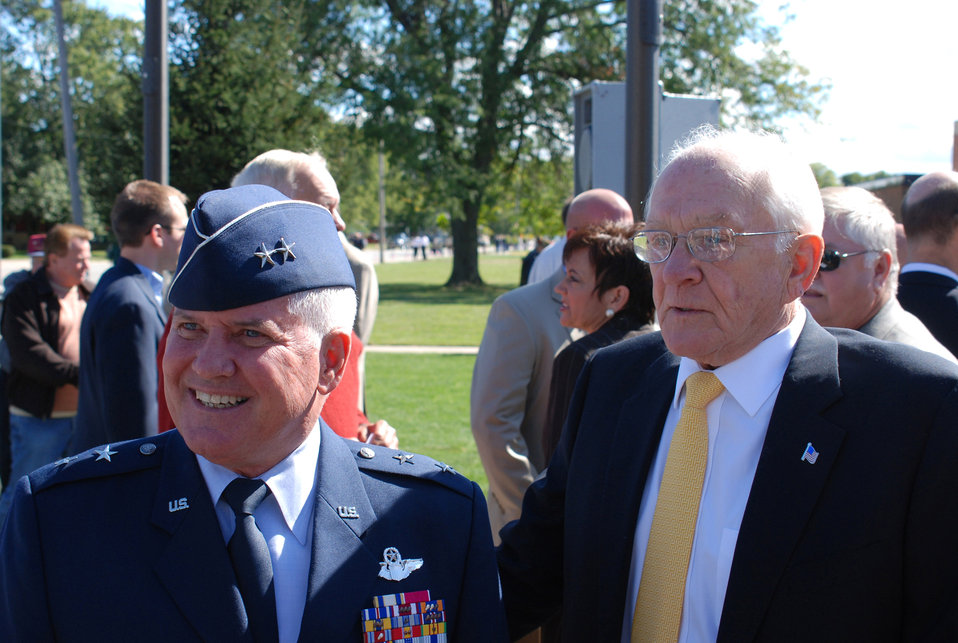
Illinois town dedicates park to local war hero

Maj. Gen. Allan R. Poulin (left) and retired Col. James Kasler chat with other people after the Kasler-Momence Veterans Park dedication Sept. 15 in Momence, Ill. The general's parents and Colonel Kasler became friends when the colonel was in the Air Force. General Poulin is the vice commander of Air Force Reserve Command.